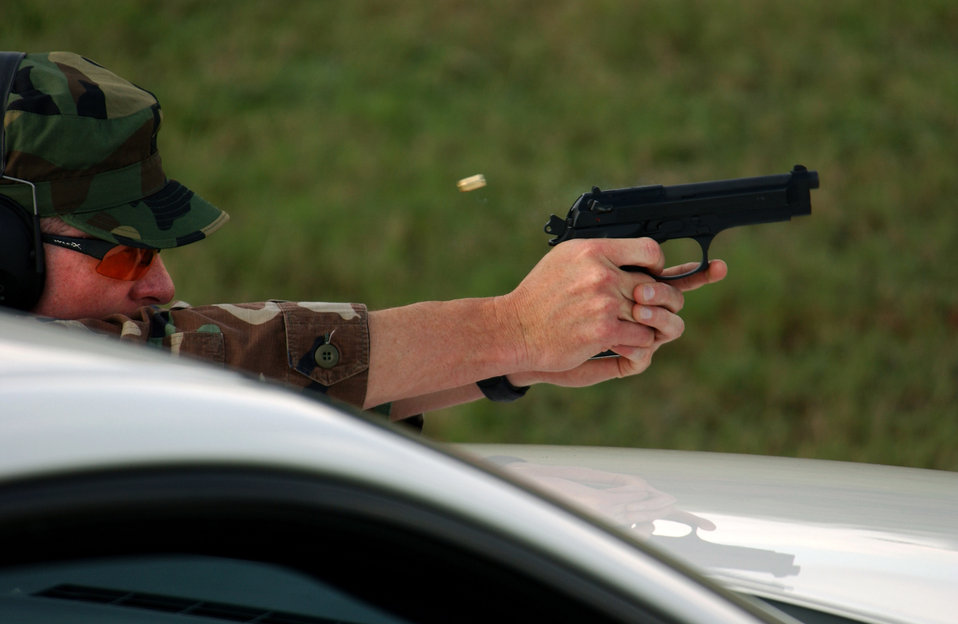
Defender Challenge 2004

LACKLAND AIR FORCE BASE, Texas -- Senior Master Sergeant Glynn Davis fires a 9 mm Beretta during the pistol and shotgun competition Oct. 25 at Defender Challenge 2004. It is an annual worldwide security forces competition held here. Sergeant Davis is assigned to the 568th Security Forces Squadron at Ramstein Air Base, Germany.